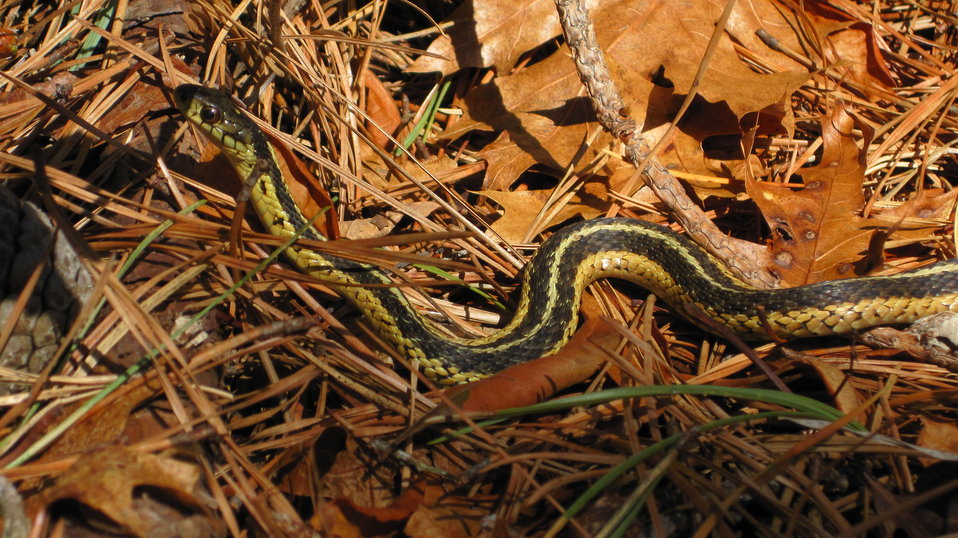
Garter Snake

Photographed at Wertheim National Wildlife Refuge.